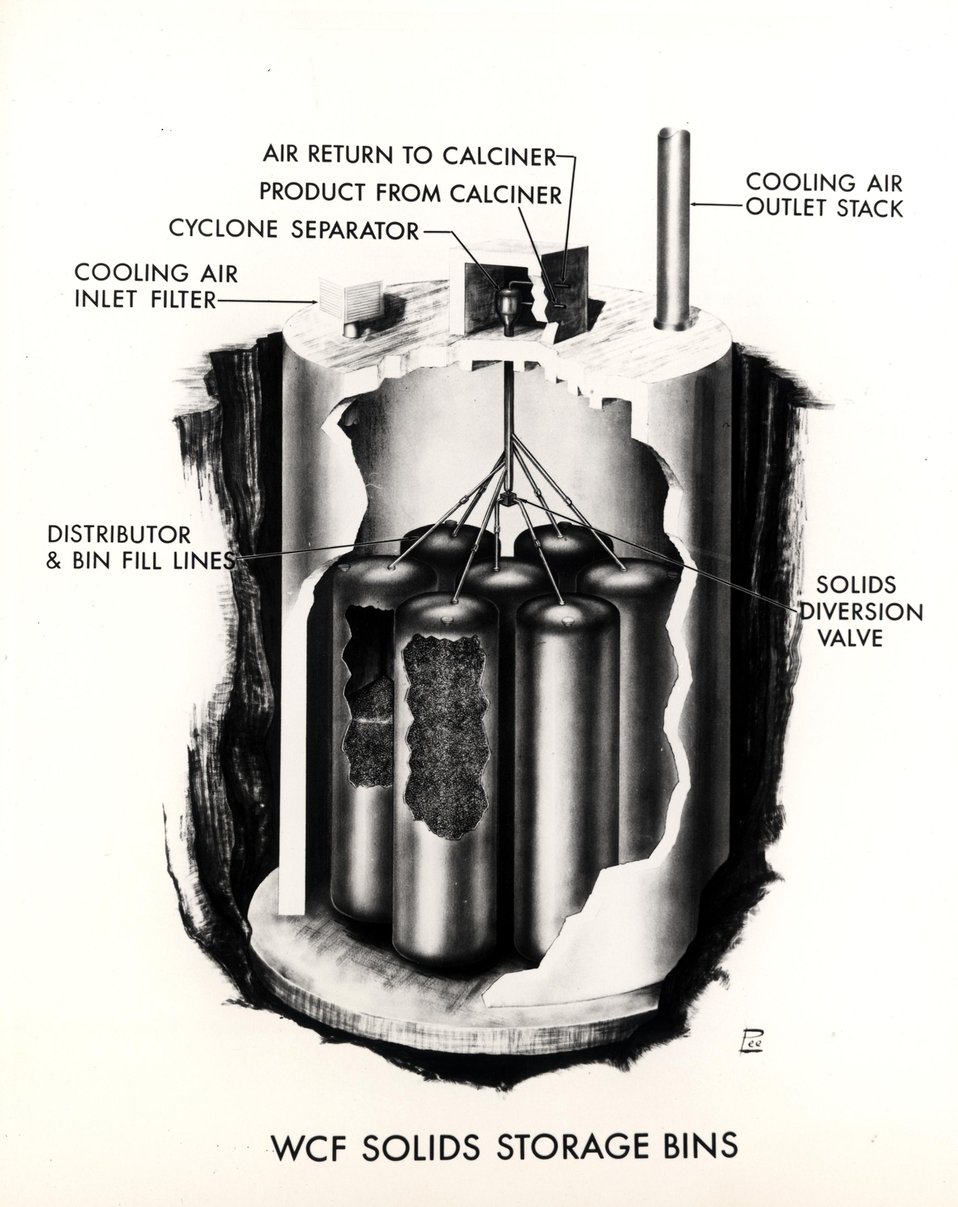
Idaho's solidified high-level waste storage... This is an artist's cutaway concept of the Waste Calcining Facility's solids storage bins at the Atomic Energy Commission's National Reactor Testing Station in Idaho.